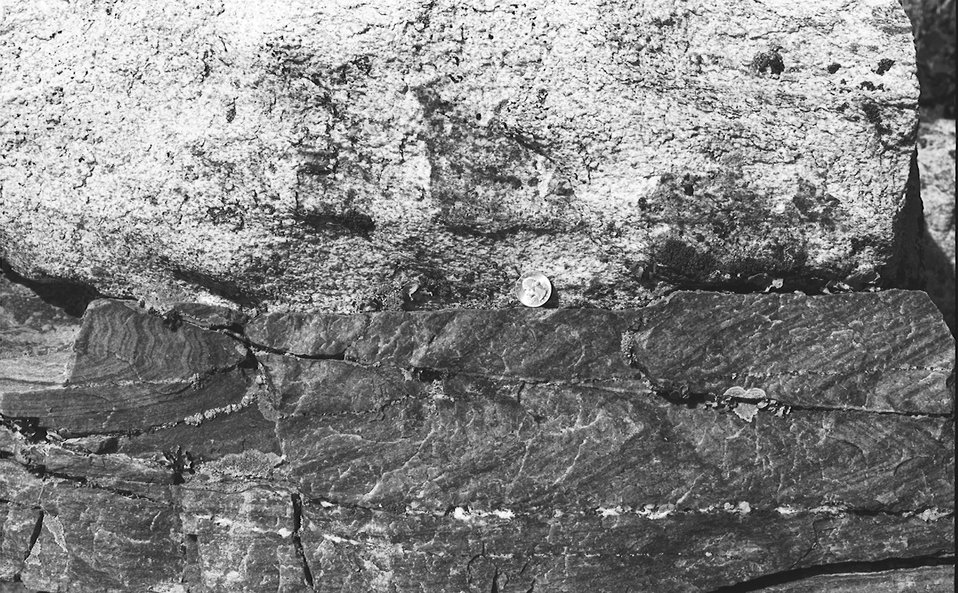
Axial plane dike at Oakley Burley Field Office USRD Upper Snake River District